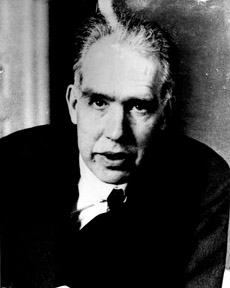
Niels Bohr, 1945.